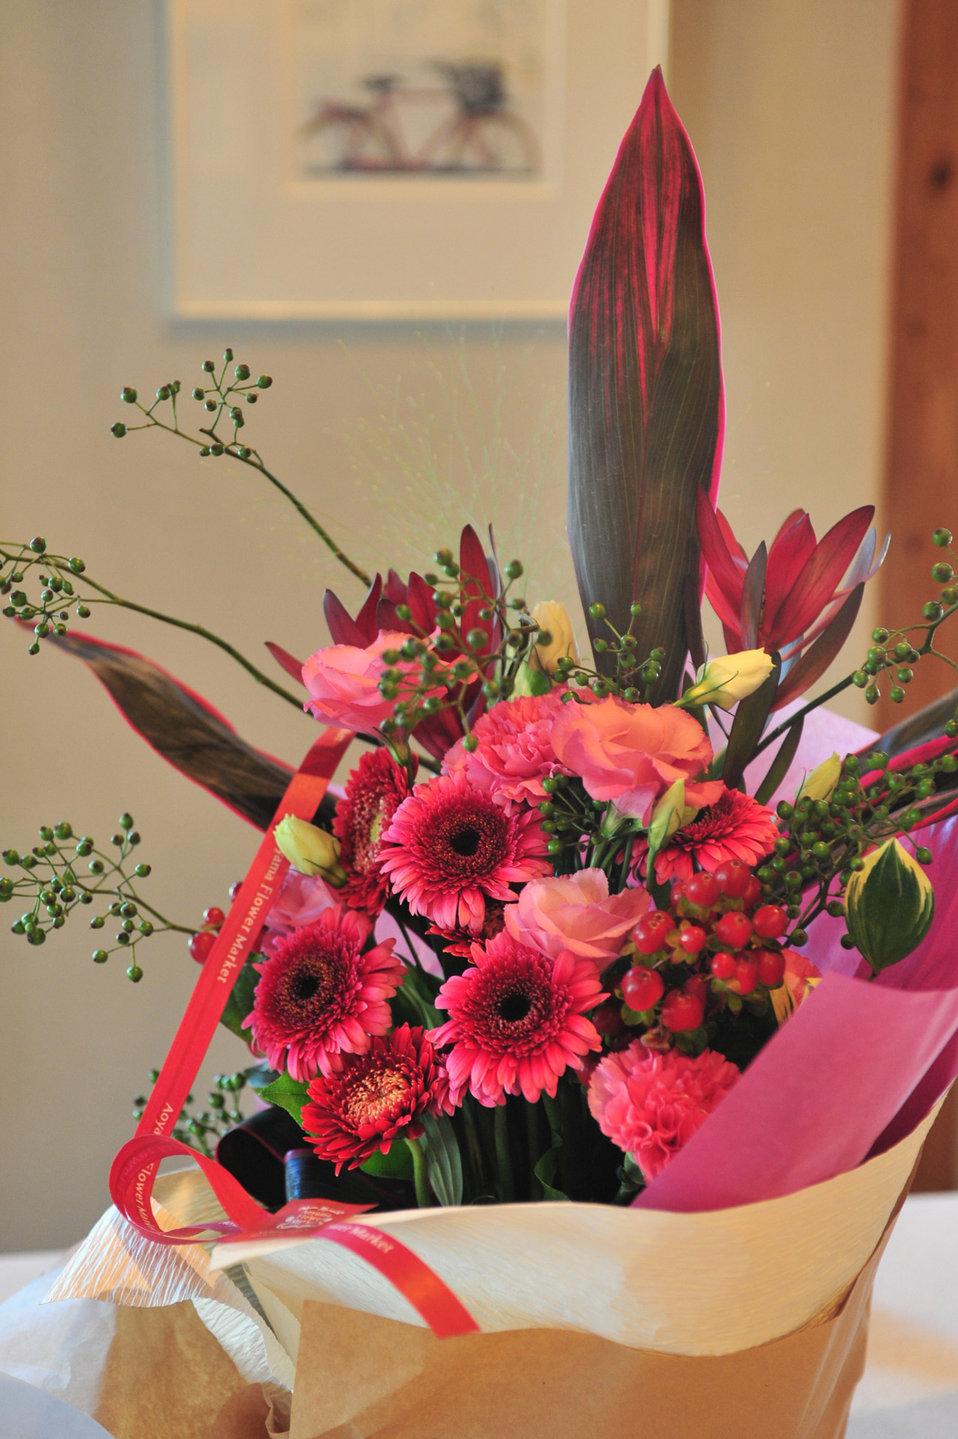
Flower arrangement.